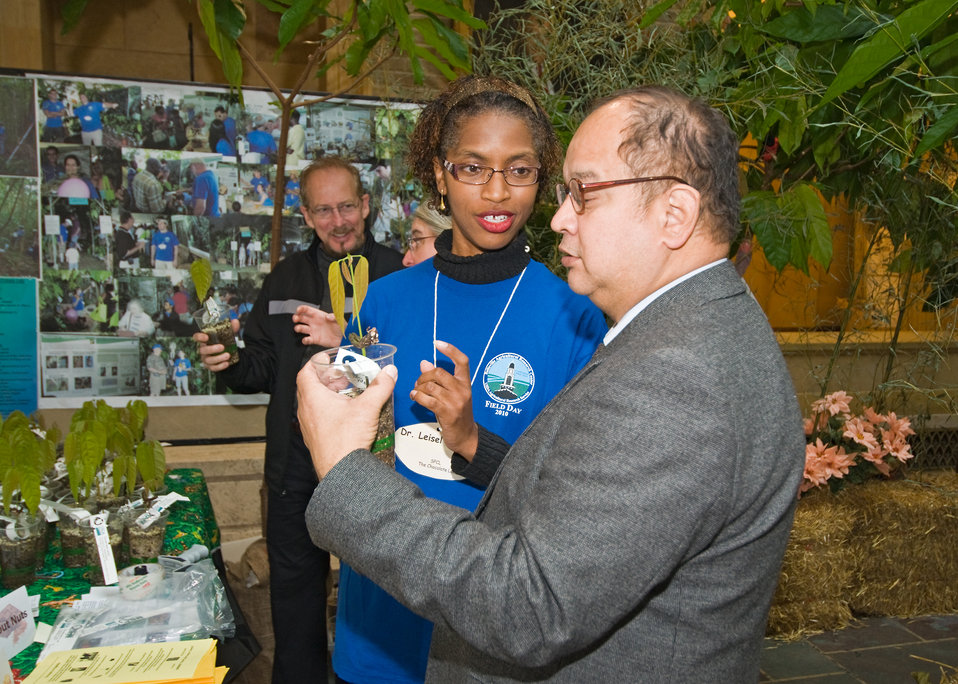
Dr. Leisel Lashley, Research Scientist, Sustainable Perennial Crop Laboratory, Agricultural Research Service in Beltsville, Maryland explains how to take care of a chocolate plant to Richard Fierroz, Office of Operations. The chocolate plants were available for visitors to the, 'Celebrating Science: Bed Bugs...Chocolate...and Beyond' event held at the United States Department of Agriculture in Washington, DC, on Monday, October 4, 2010. USDA Photo 10di1515-27 by Bob Nichols.